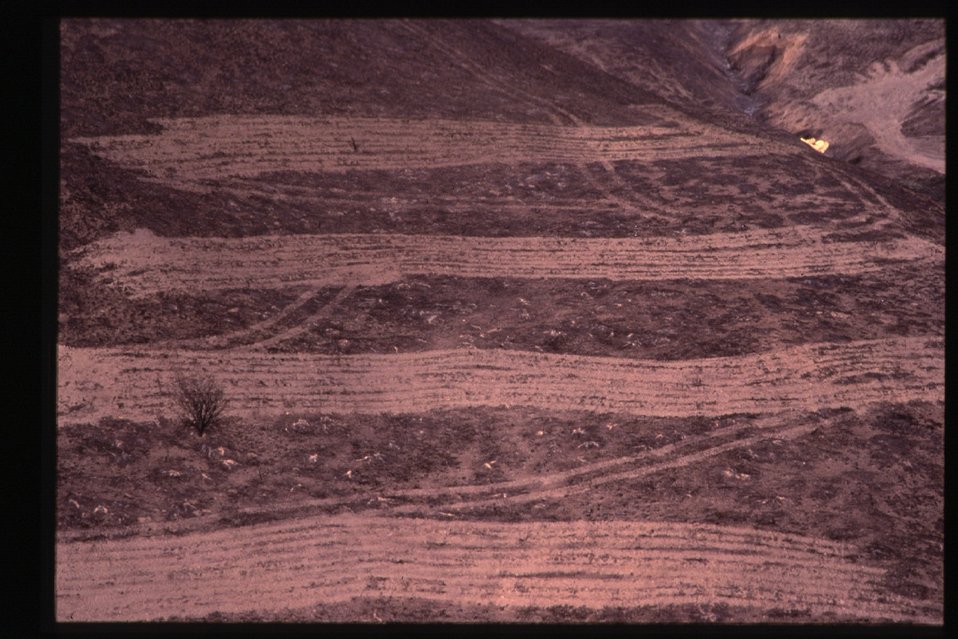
8th Street Fire Four Rivers Field Office LSRD Lower Snake River District